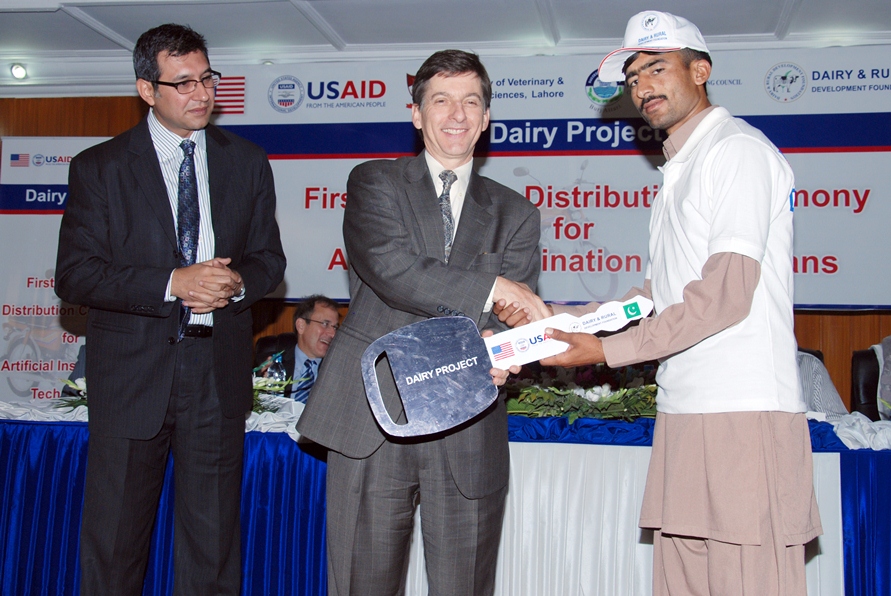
USAID Mission Director Dr. Andrew Sisson presenting motorcycle keys to a successfull AI technician 3